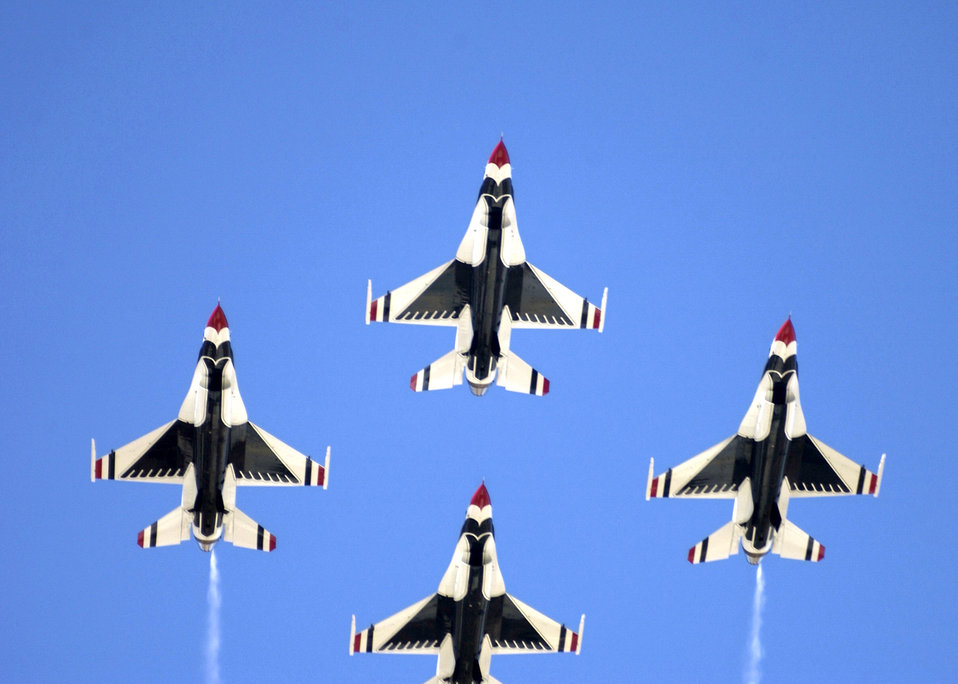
Thunderbirds

OVER DAVIS-MONTHAN AIR FORCE BASE, Ariz. -- The U.S. Air Force Thunderbirds flight demonstration team fly in diamond formation during the 2005 Aerospace and Arizona days here April 2. The Thunderbirds are assigned to the U.S. Air Force Air Demonstration Squadron at Nellis Air Force Base, Nev.